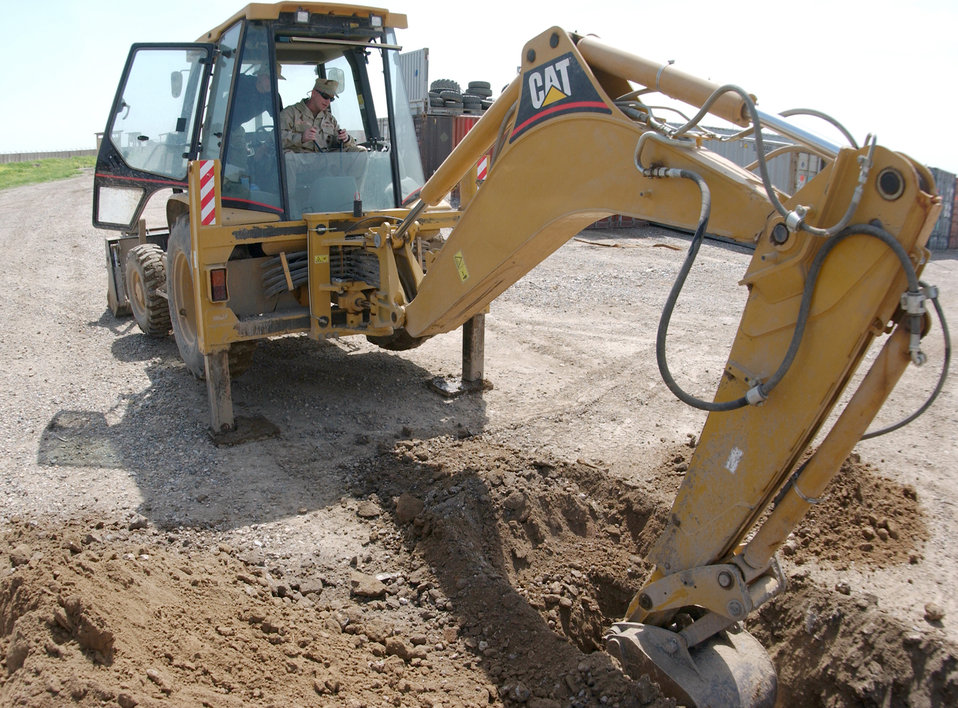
Airmen improve base for Soldiers in northern Iraq

Chief Master Sgt. Layton Clark digs a trench for fiber optic cable at Forward Operating Base Marez, Iraq, on Wednesday, April 26, 2006. He is the is the 332nd Air Expeditionary Wing command chief.